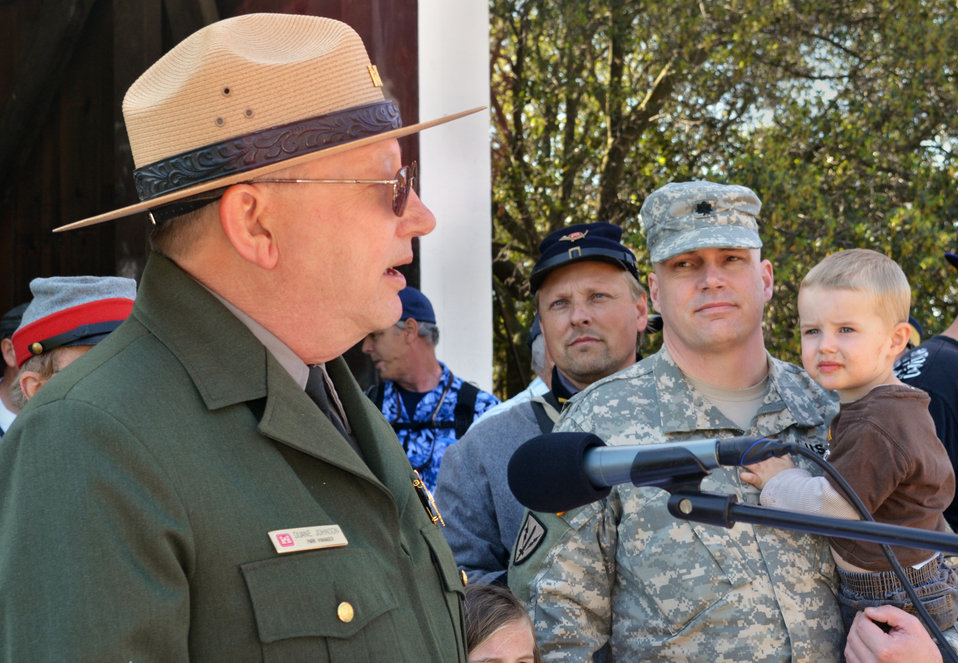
Historic weekend in Knights Ferry

Duane Johnson, park manager for the U.S. Army Corps of Engineers Sacramento District’s Stanislaus River Parks (left), speaks about the historic Knights Ferry covered bridge in Knights Ferry, Calif., March 22, 2014, as contracting team leader, Lt. Col. Chris Tande and his son, Gerrit, look on. Sacramento District employees and hundreds of history buffs gathered in Knights Ferry to officially commemorate attaining National Historic Landmark status for the 300-foot-long covered bridge in the historic 19th-century township.